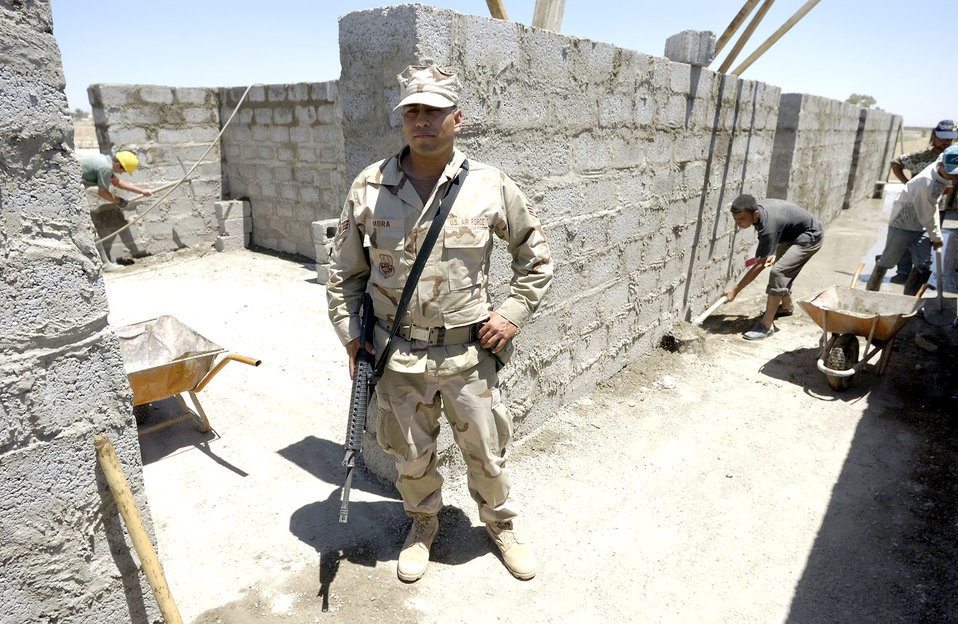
Airmen defend inside the wire

KIRKUK AIR BASE, Iraq -- Senior Airman Adam Mora monitors third-country nationals as they construct a building here. Hundreds of local employees work on the base daily under the watchful eye of escorts. Airman Mora is deployed from Mountain Home Air Force Base, Idaho.